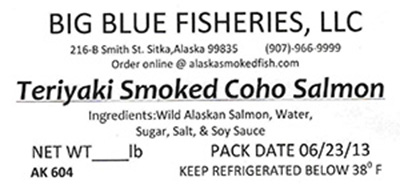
RECALLED – Salmon, Cod

September 30, 2013 – Product Recall – Big Blue Fisheries, Llc Recalls All Smoked Products From All Lots, Various Sizes, in Vacuum Packaging Because of Possible Health Risk.